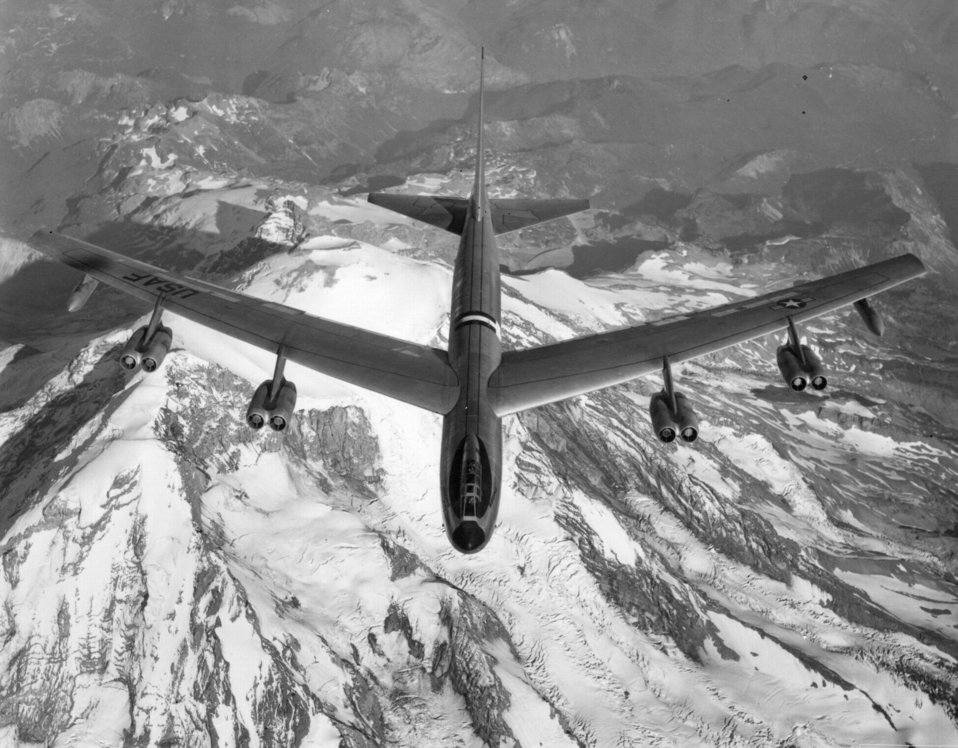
B-52

1950's -- B-52